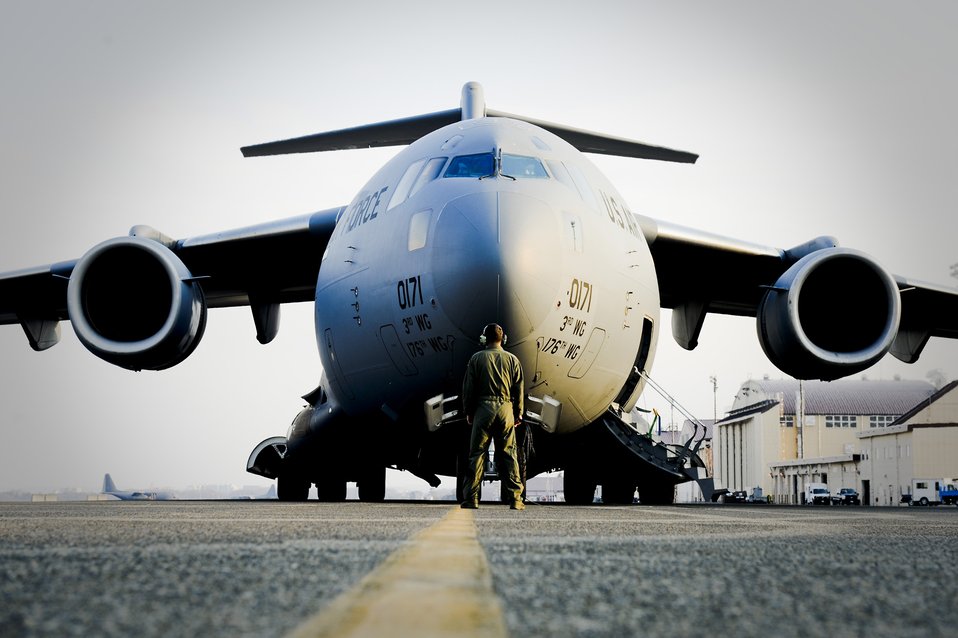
Roaring to life

Tech. Sgt. Mark Shertzer watches as the engines of a C-17 Globemaster III are started March 20, 2011, at Yokota Air Base, Japan. Shertzer is assigned to the 535th Airlift Squadron at Hickam Air Force Base, Hawaii.